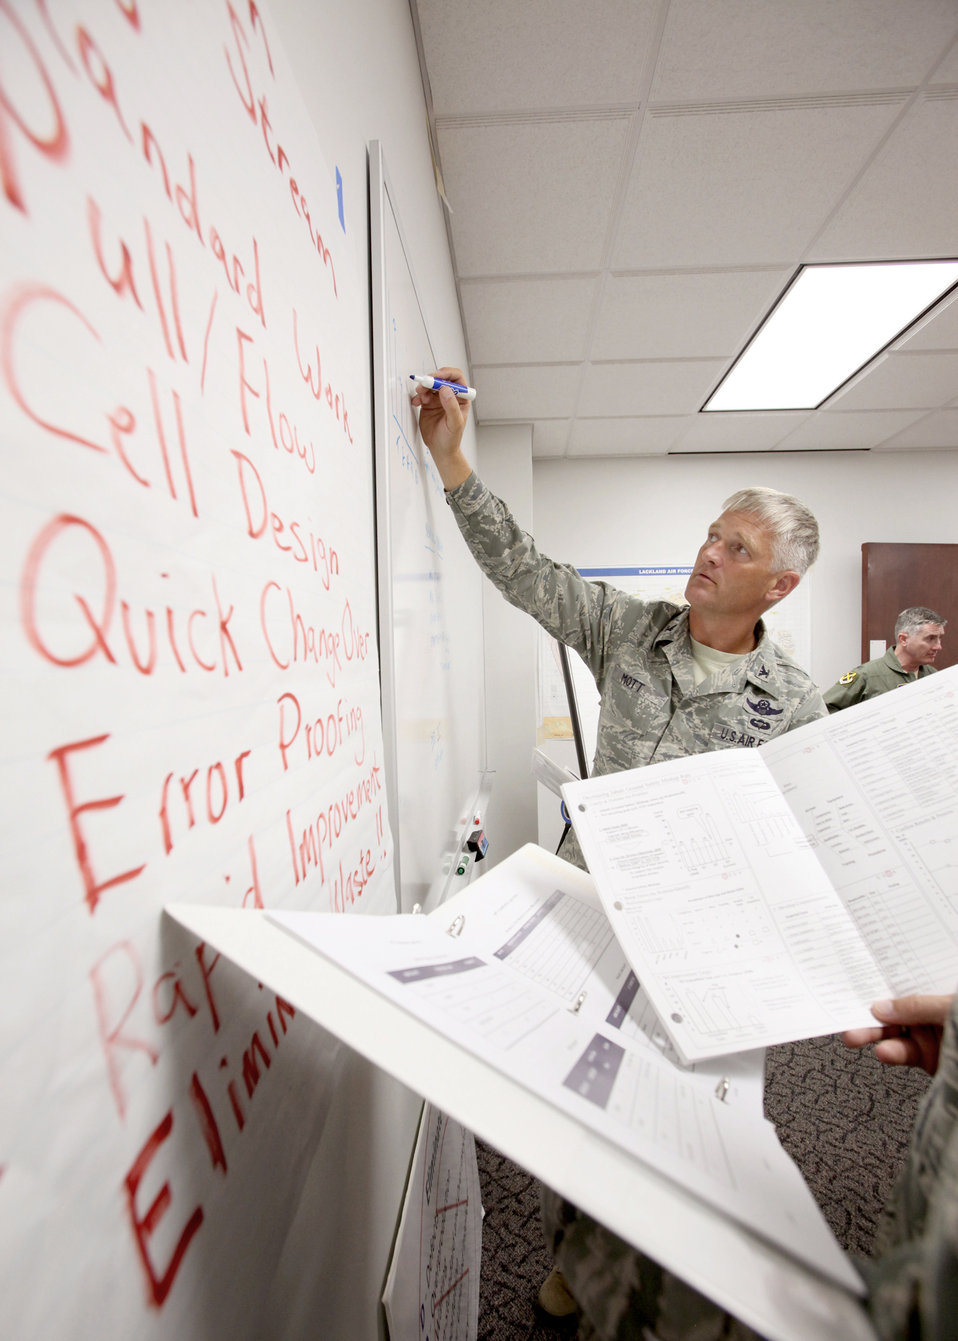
Senior leaders 'lean' on AFSO21

Col. William H. Mott V and a group of senior leaders work on an eight-step problem solving exercise during the Air Force Smart Operations for the 21st Century leadership seminar Aug. 19, 2010, at Lackland Air Force Base, Texas. Colonel Mott is the 37th Training Wing commander.